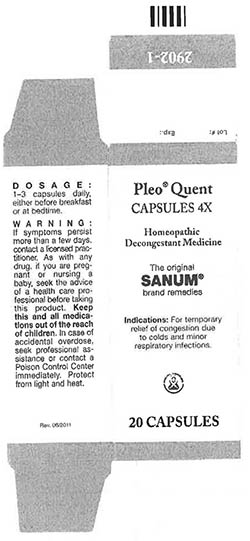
RECALLED – Homeopathic Drug Products

March 18, 2014 – Product Recall – Terra-Medica Issues Voluntary Nationwide Recall of Specified Lots of Pleo Homeopathic Drug Products Due to the Potential for Undeclared Penicillin.